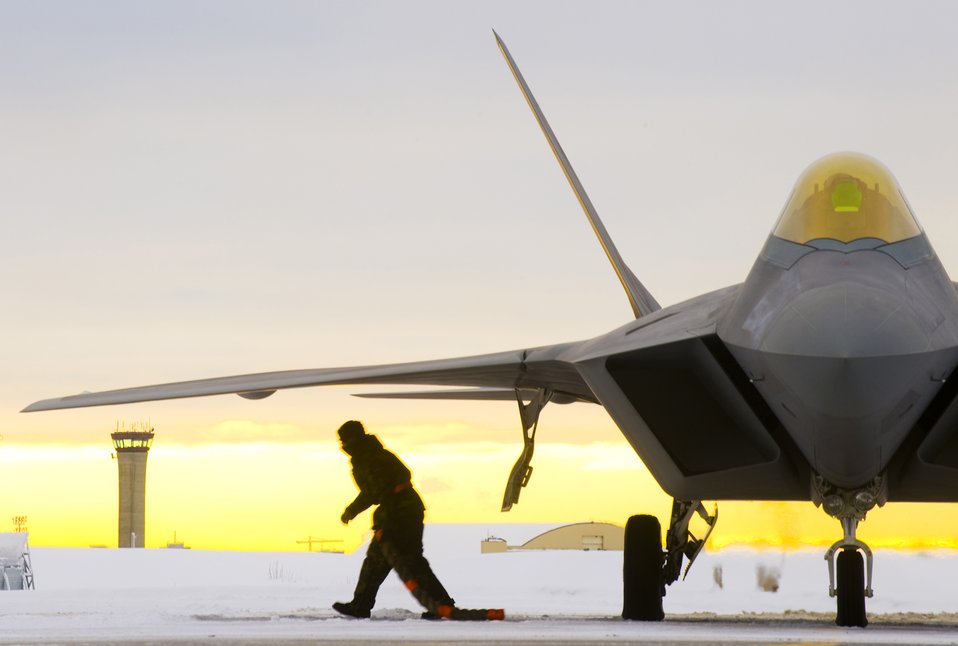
Alaska's F-22s prepare for IOC

A 90th Aircraft Maintenance Unit crew chief pulls the chocks from an F-22A Raptor laden with concrete bombs before departing for a training mission. For the first time at Elmendorf Air Force Base, Alaska, a mock bomb drop over Alaska, Jan. 16, provides integral training for both fighters and maintainers in preparation to declare its initial operation capabilities.